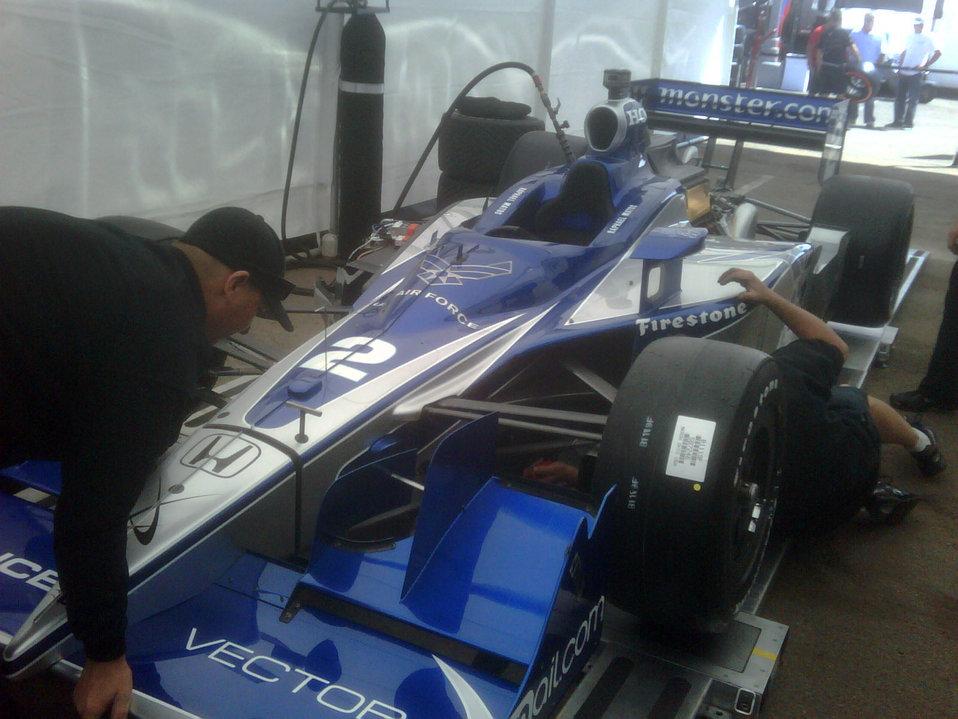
Air Force-Themed Indy Car

Luczo Dragon Racing team members prepare the Air Force-themed Indy race car April 16 for its debut at Long Beach, Calif. Luczo Dragon Racing will display the Air Force Symbol on race car no. 2 during the 2009 race season, including the Indy 500.